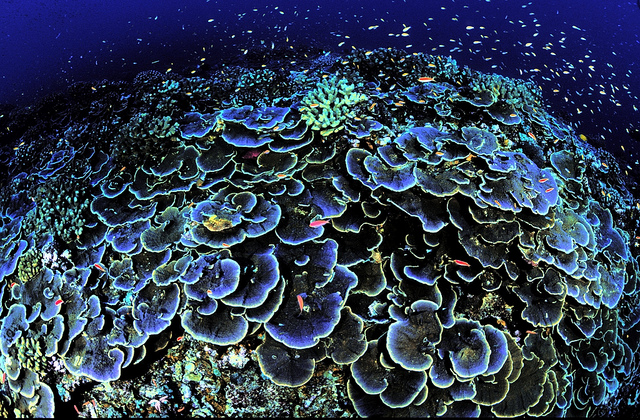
coral

Sworls of Montipora aequituberculata attract fish
Jarvis Island National Wildlife Refuge, Pacific Islands